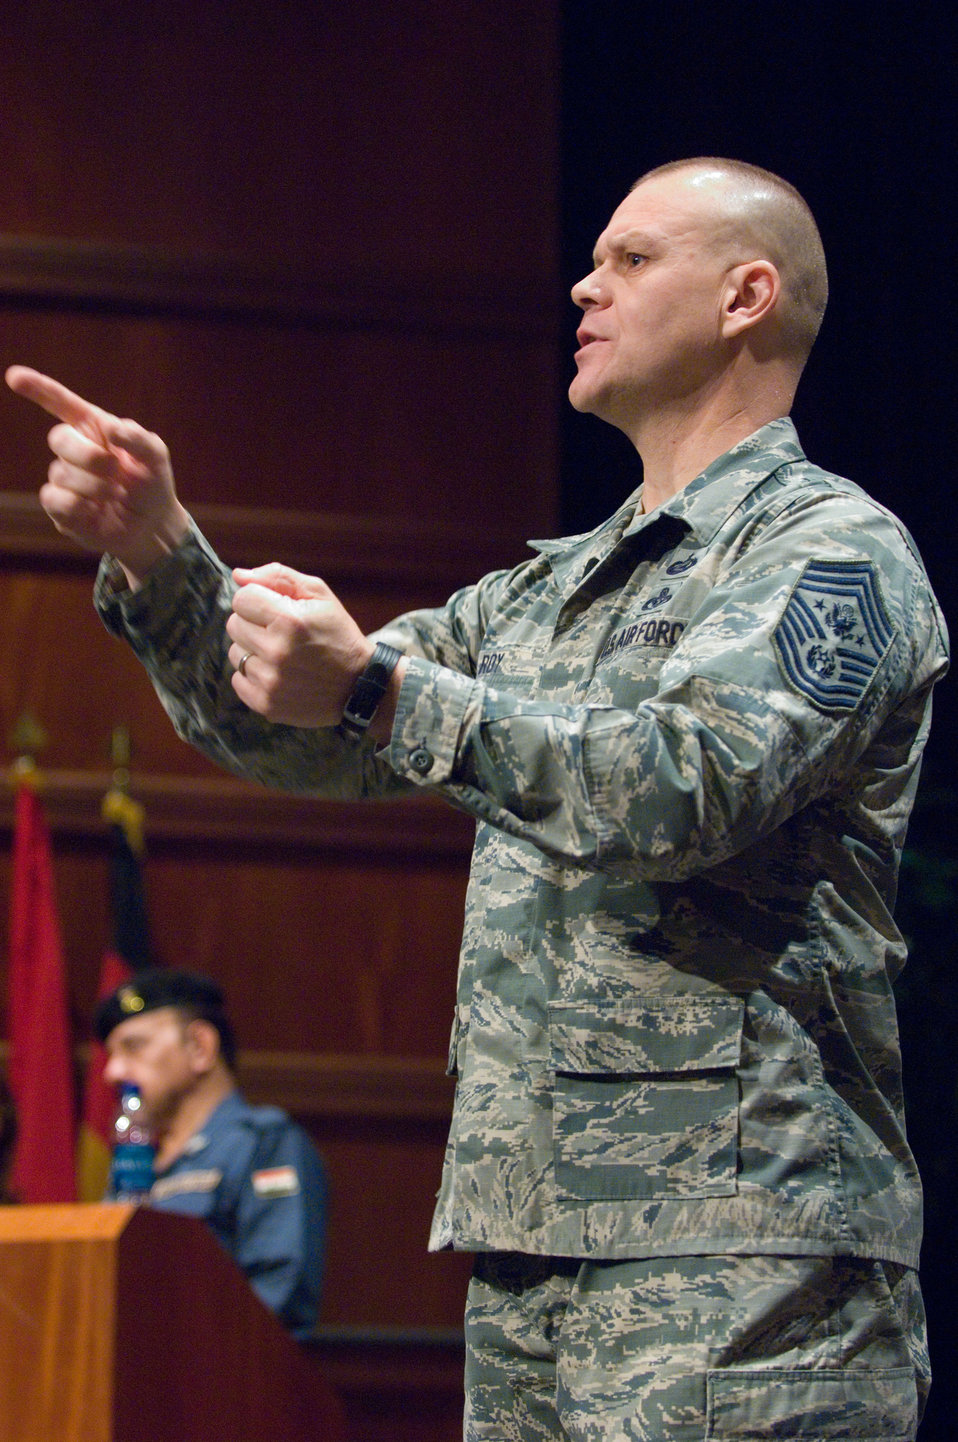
CMSAF Roy and counterpart visit Maxwell

Chief Master Sgt. of the Air Force James A. Roy speaks alongside his Iraqi counterpart, the chief master sergeant of the Iraqi air force, during a session Dec. 7, 2010, at the U.S. Air Force's senior NCO academy at Maxwell Air Force Base, Ala. The Iraqi chief was in the U.S. for the first time, and visited Air University and other Air Education and Training Command bases to observe and glean ideas concerning how U.S. Air Force officials educate and train their Airmen throughout their careers.